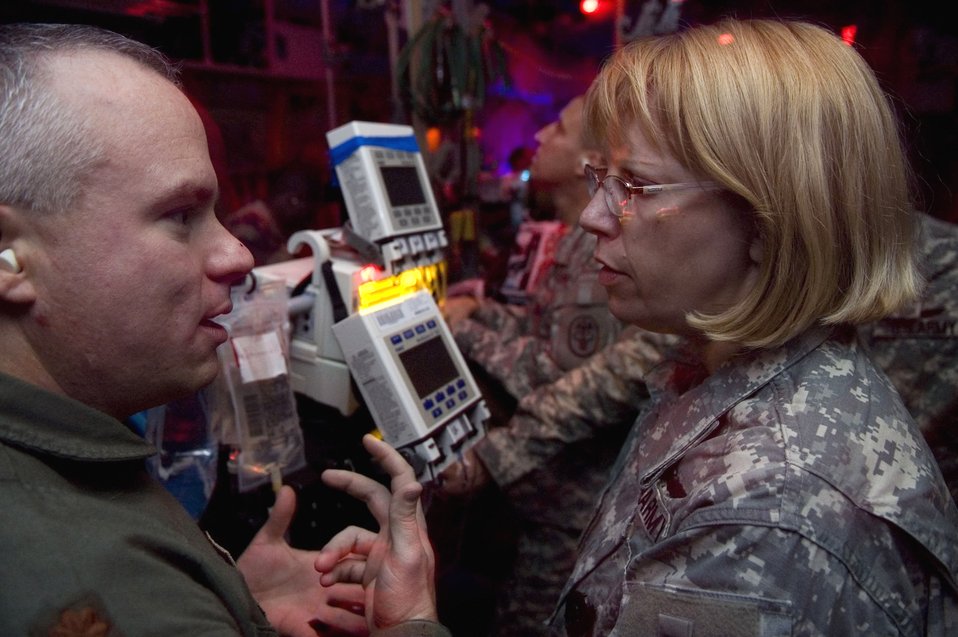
Air Force provides Army burn flight team with training

Maj. (Dr.) Julio Lairet discusses in-flight procedures for transporting burn victims with Maj. Elizabeth Mann, a registered nurse with the special medical augmentation response team at Brooke Army Medical Center, during the C-130 Hercules simulator training portion of critical care air transport team training.